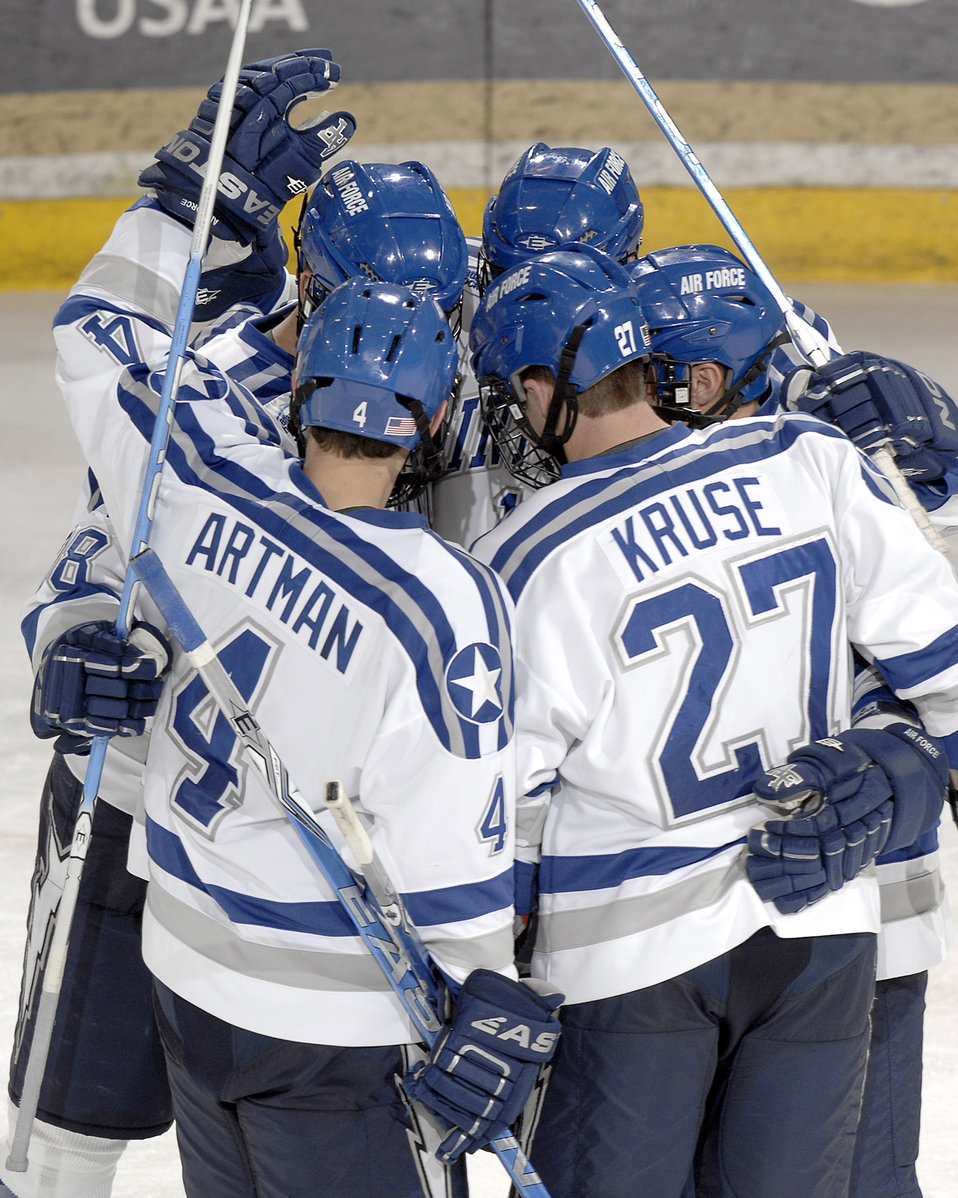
Falcons defeat the Pronghorns

The Falcons celebrate after scoring a goal during a hockey exhibition game against the University of Lethbridge Oct. 4, 2010, at the U.S. Air Force Academy's Cadet Ice Arena in Colorado Springs, Colo. Air Force Falcons defeated the Pronghorns 4-3 in overtime.